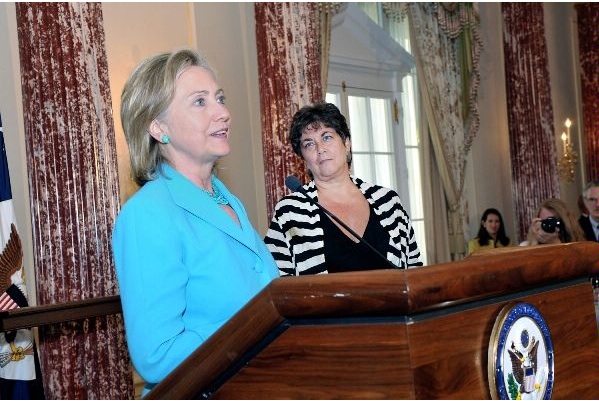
Secretary Clinton Delivers Remarks at Reception for the Jewish Community and Special Envoy Rosenthal

U.S. Secretary of State Hillary Rodham Clinton delivers remarks at a reception hosted for the Jewish Community and Hannah Rosenthal, Special Envoy to Monitor and Combat Anti-Semitism, at the U.S. Department of State in Washington, D.C., on July 13, 2010.